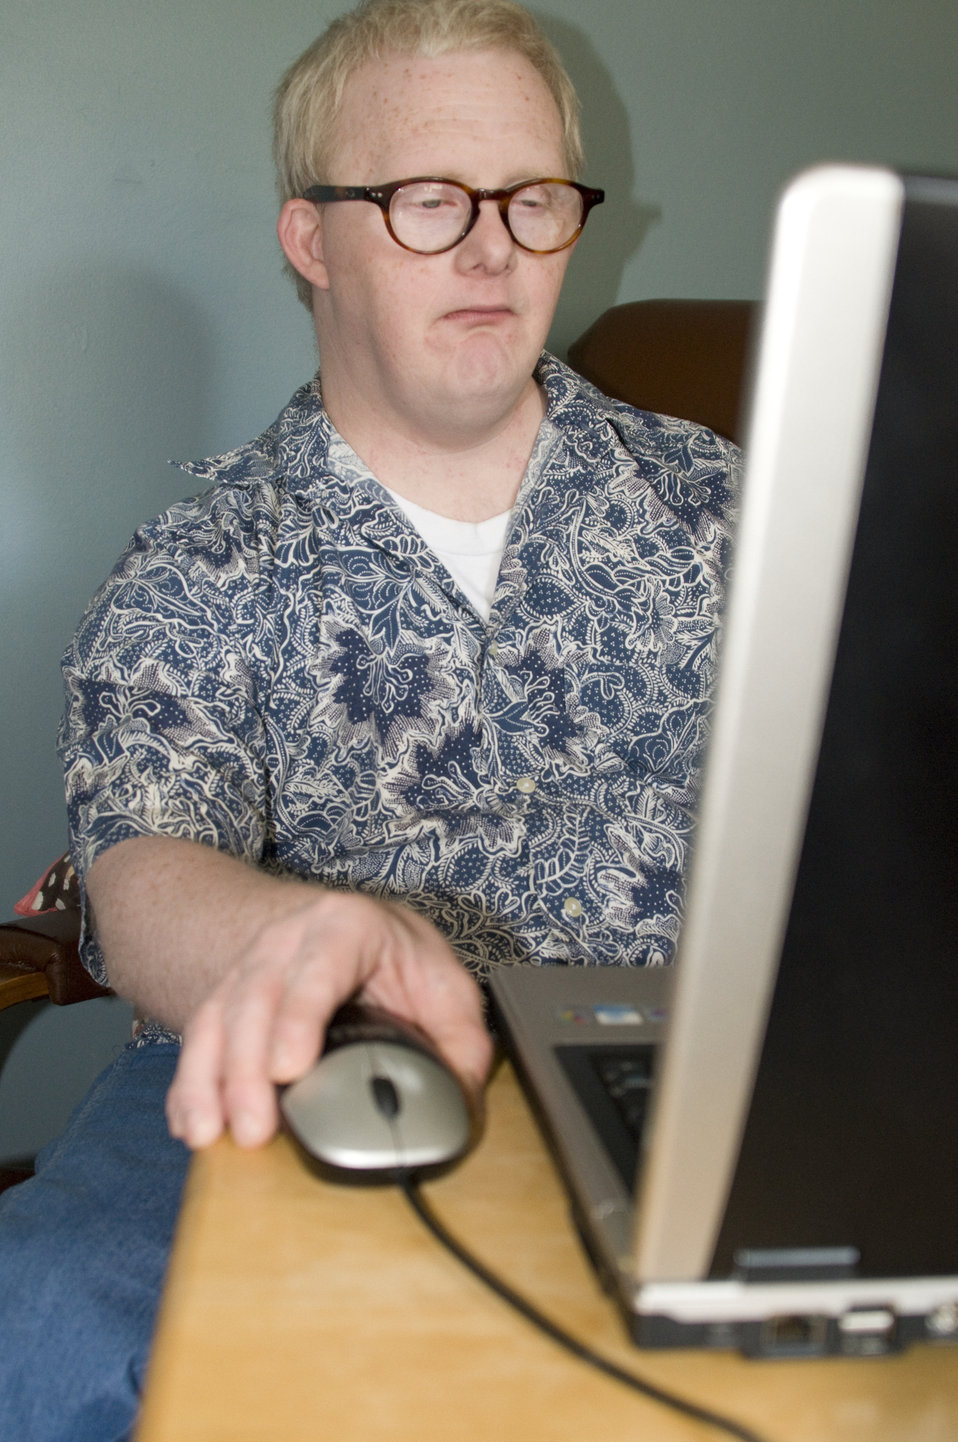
A man using a laptop

The man pictured here was shown using his laptop computer's mouse. Though intellectually-challenged, he is still able to navigate his way through the Internet, and effectively use this computer, the mouse, and its keyboard controls.